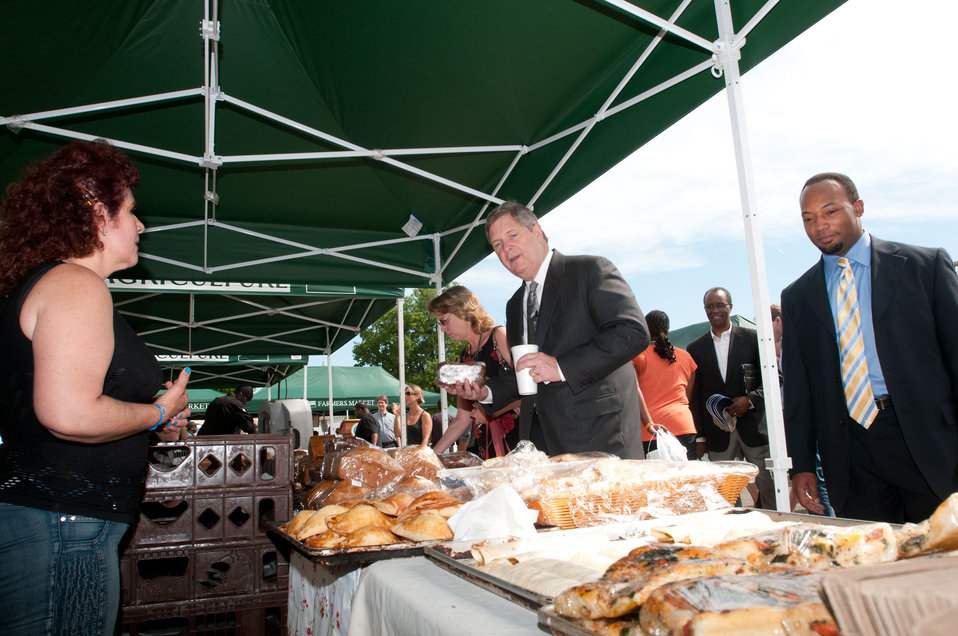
Priscilla Rodriguez (left) helped Agriculture Secretary Tom Vilsack (center) shop for bread at the USDA Farmers Market on Friday, Jun 3, 2011 in Washington, DC. Secretary Vilsack purchased fresh, local fruits and vegetables, baked goods to start USDA’s participation in the 'Feds Feed Families' food drive. The USDA Farmers Market is located at the corner of 12th Street and Independence Avenue and will be open every Friday from 10:00 a.m. - 2:00 p.m. through November 18th. Special events will be happening every Friday at the market and at the adjacent People's Garden all season.